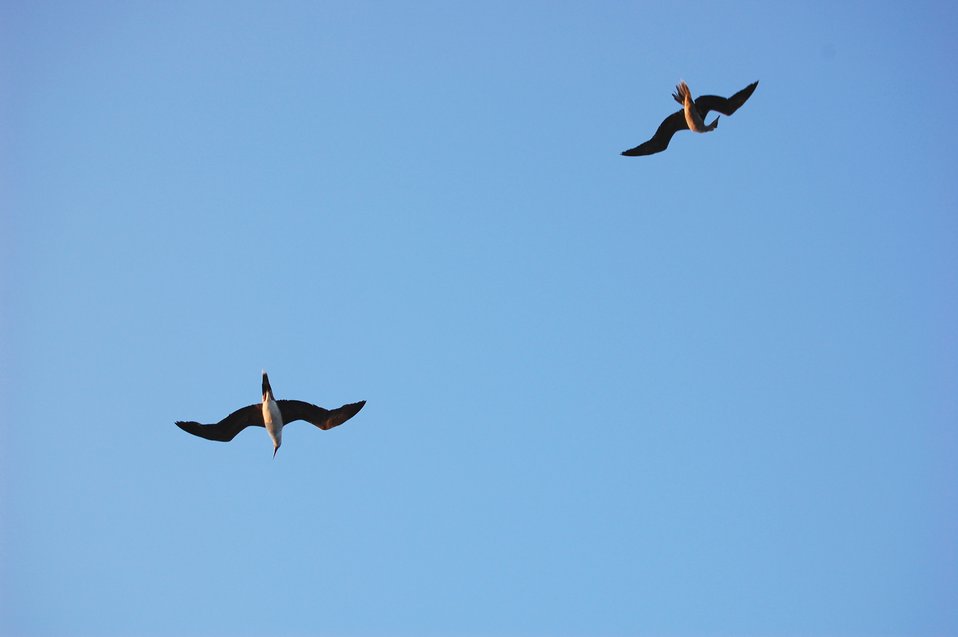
Red-footed booby in flight.